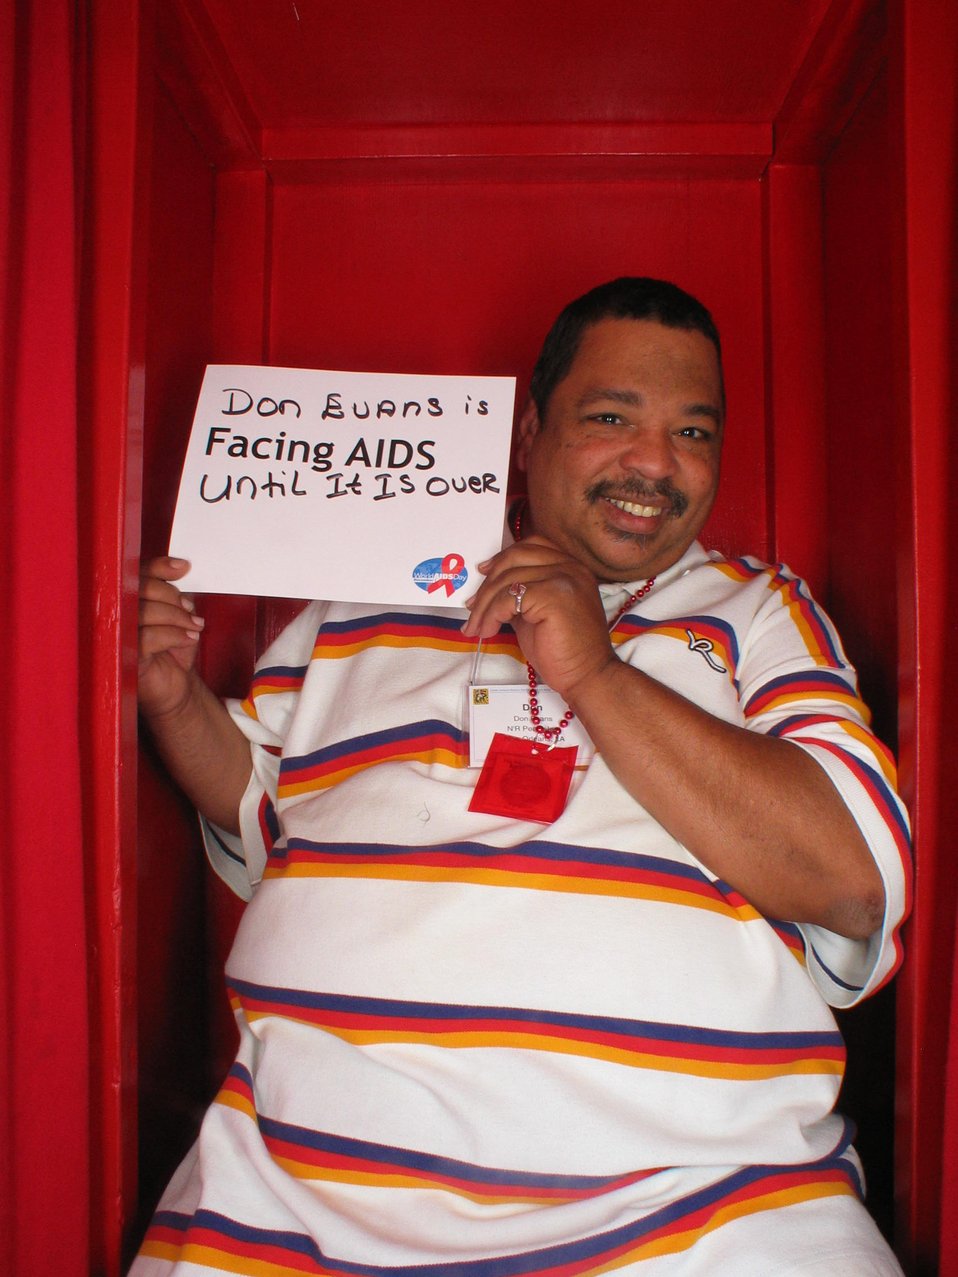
Facing AIDS until it is over.